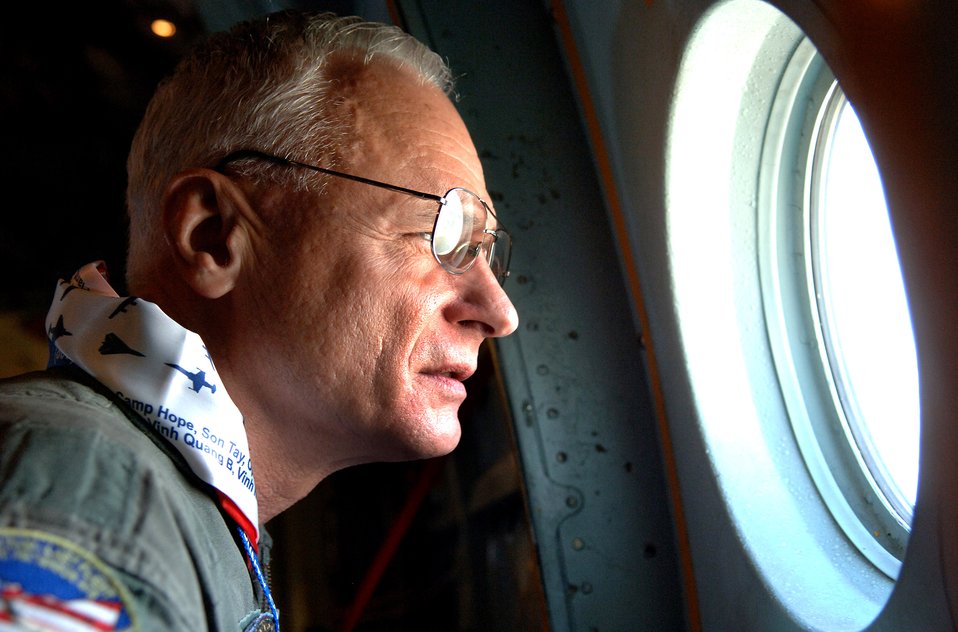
'Hanoi Taxi' arrives at National Museum of the Air Force

Col. Tom Moe looks out the window while flying on one of the the last missions of the C-141